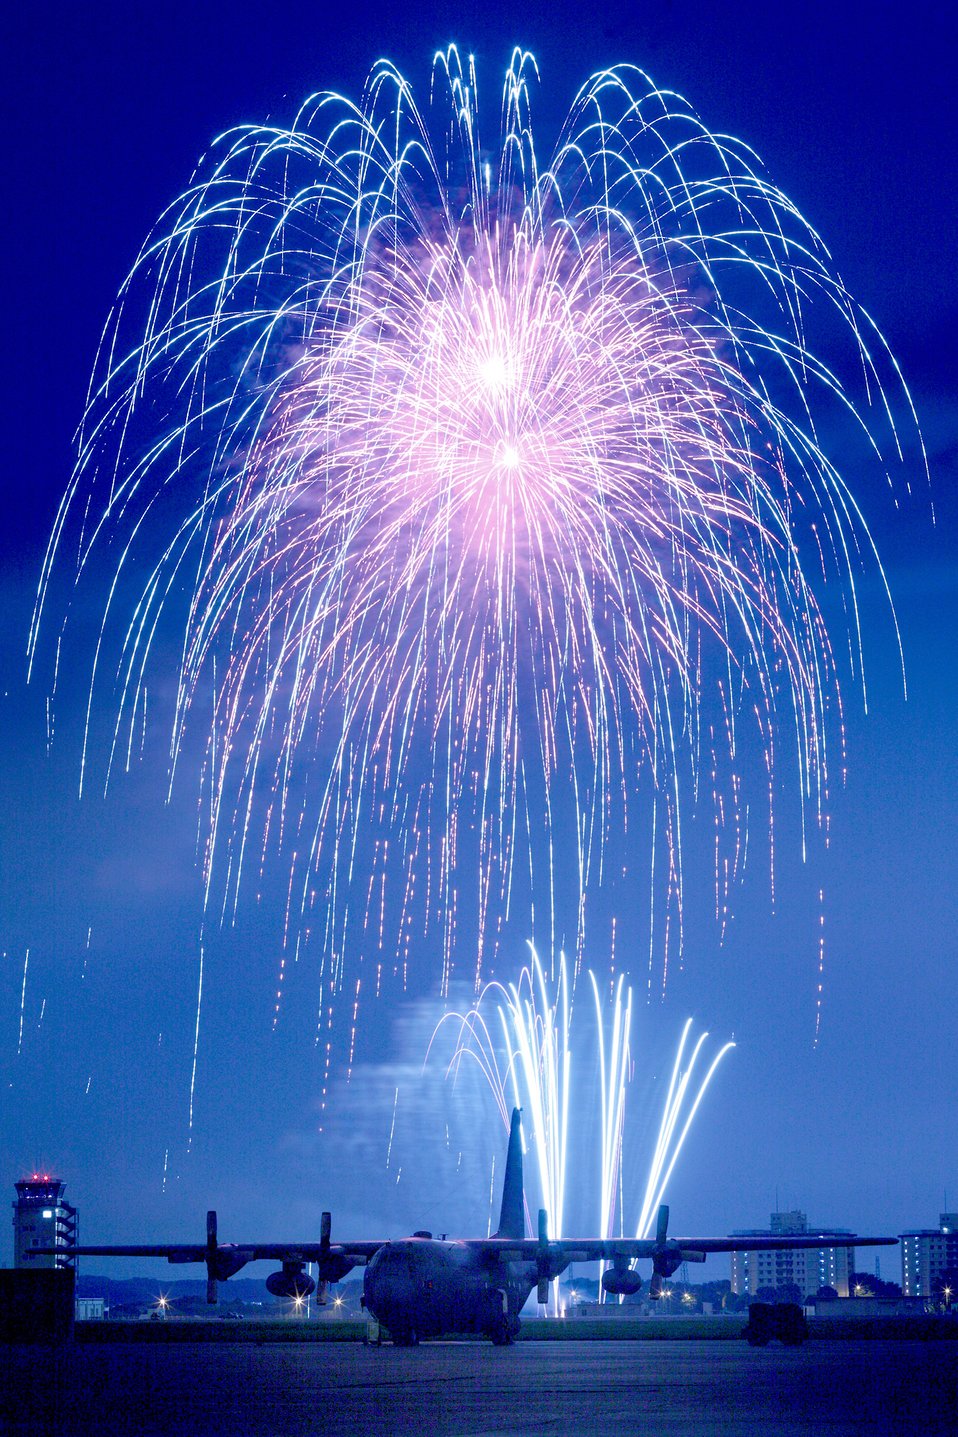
Fireworks Celebration

Fireworks burst over Yokota Air Base, Japan, July 3, 2010. Airmen of the 374th Force Support Squadron provided Yokota residents and their guests with events for all ages.